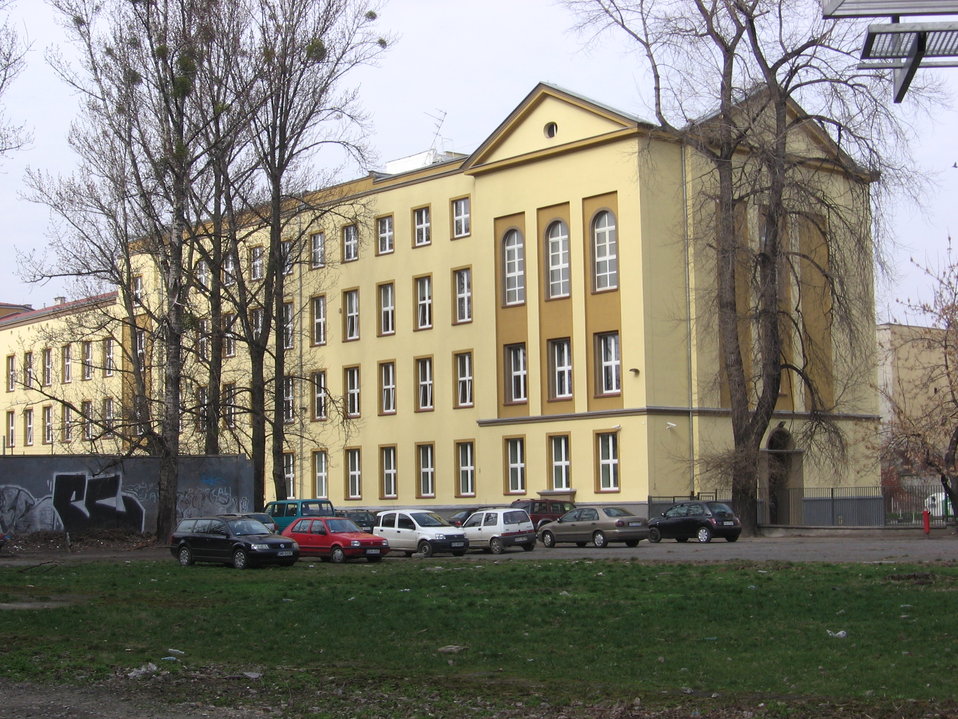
C. J. Ch. Zimmermann, Catholic and Protestant secondary school in Wroclaw, 1865, later altered. View from south east.